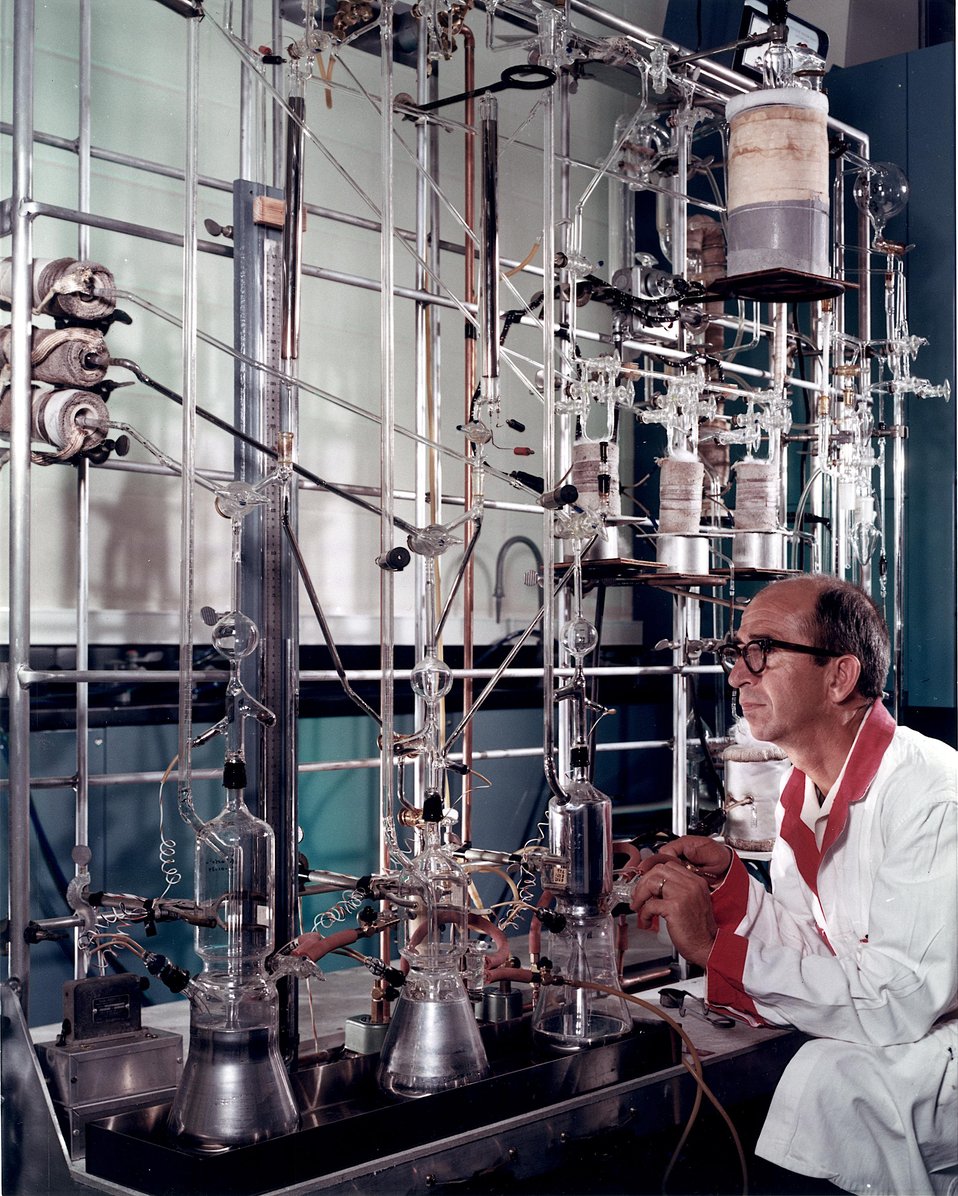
This high-vacuum system at Brookhaven National Laboratory is used in the separation
and purification of the noble gases- - argon, krypton, xenon, and radon. In the apparatus the
source material which can be either a target from an accelerator or a meteorite is melted.